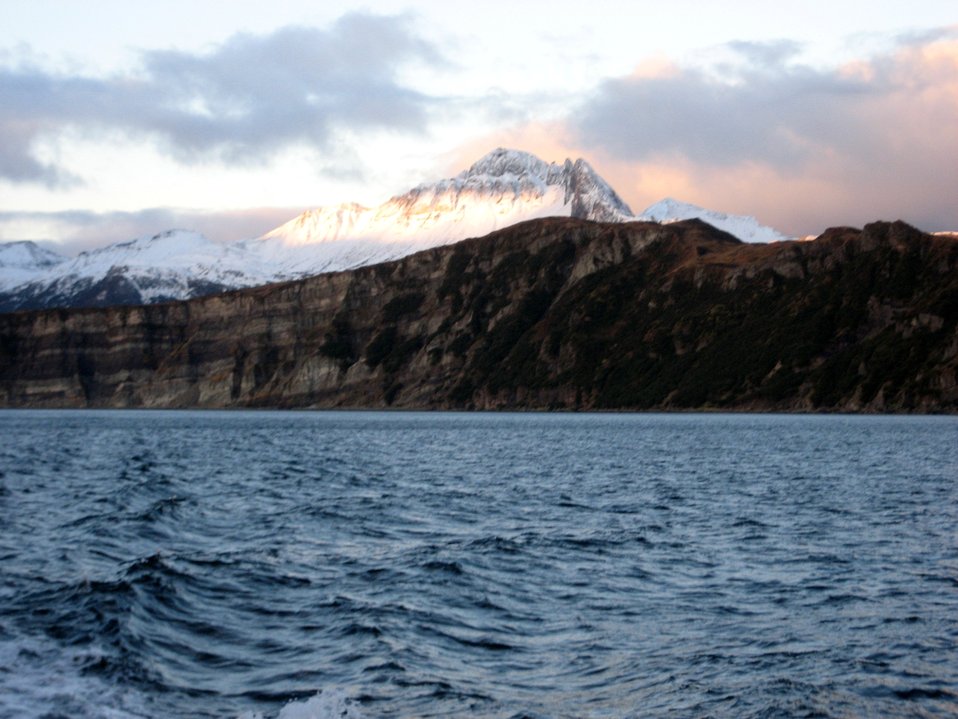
A scene along the Alaska Peninsula.